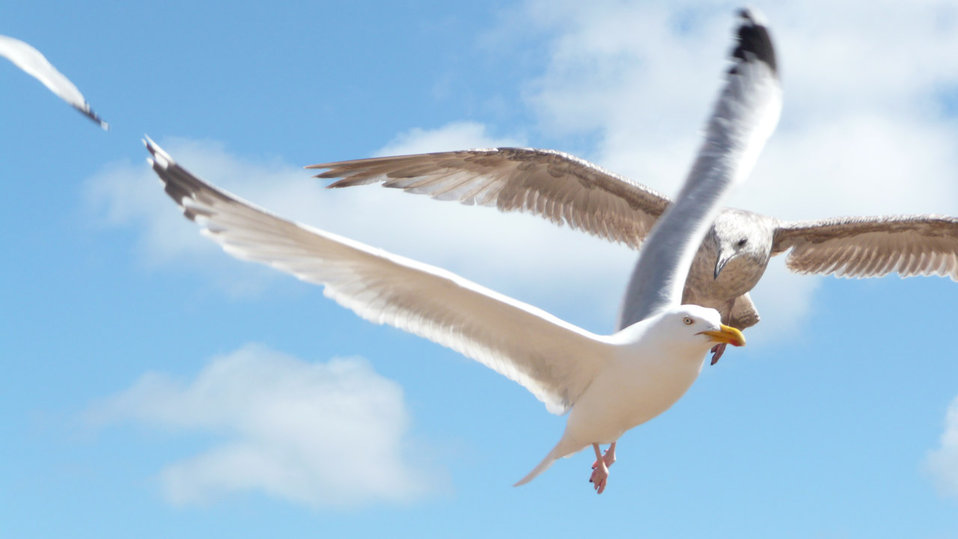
Seagull

Flying seagull.